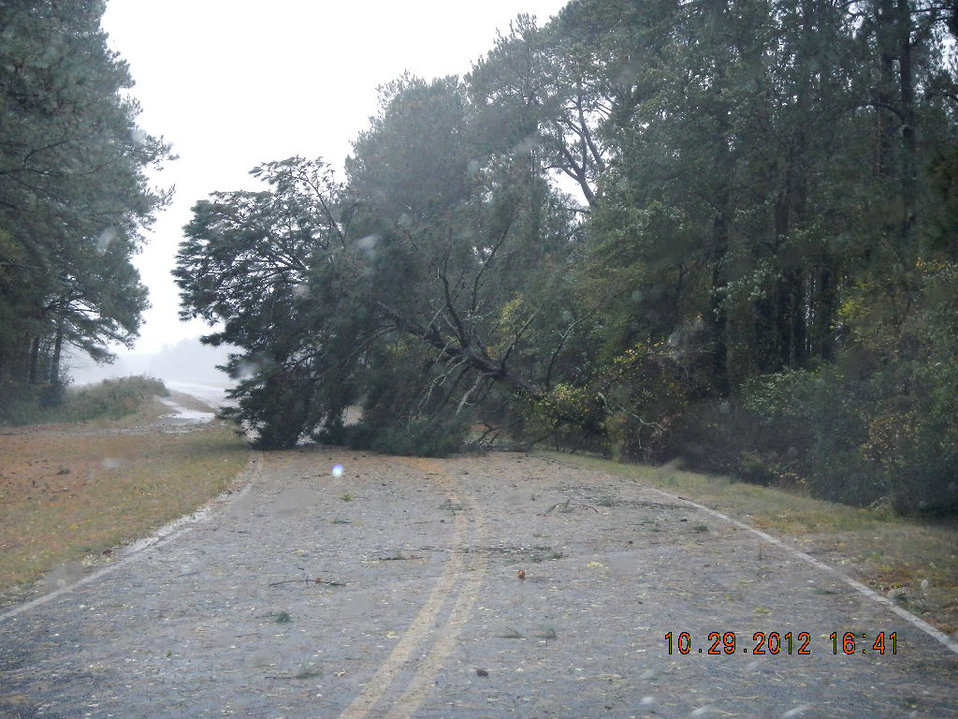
Hurricane Sandy hit Chincoteague National Wildlife Refuge (VA)

Fallen trees.